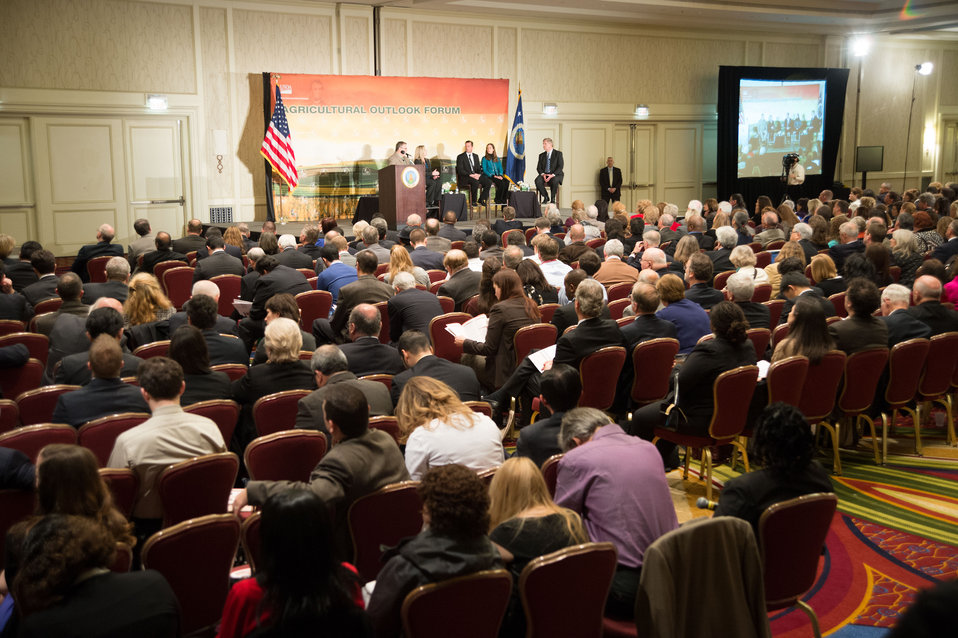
Agriculture Secretary Tom Vilsack moderates the plenary panel of Young Farmers - Unlimited Opportunities at the 2014 Agricultural Outlook Forum in Arlington, VA., on Thursday, Feb. 20, 2014. (L to R Veteran Coalition Executive Director and Farmer Michael O’Gorman, Top Producer Horizon awardee Joanna Carraway, National Outstanding Young Farmer awardee Greg Wegis, National Young Farmers Coalition Interim Director Emily Oakley, and Agriculture Secretary Tom Vilsack). The U.S. Department of Agriculture's (USDA) annual Agricultural Outlook Forum brings together the agricultural community to discuss policy, trade, science, rural development, and the economic outlook for the coming year. The Forum also focuses on forestry, health and nutrition issues, and the changing dynamics and face of rural America.USDA photo by Bob Nichols.